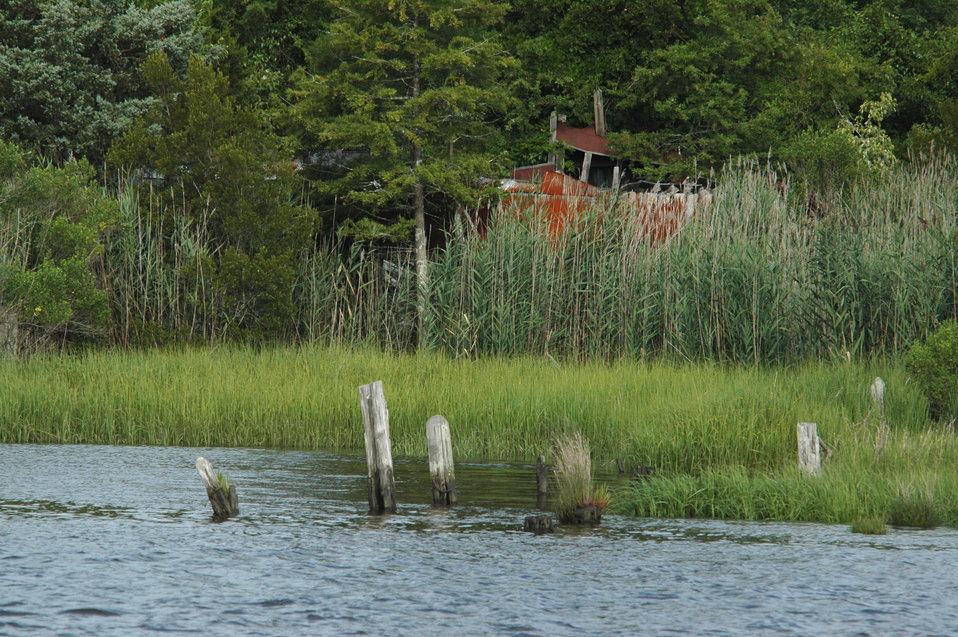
Remains of a pier and industrial facility along the Cape Fear River.